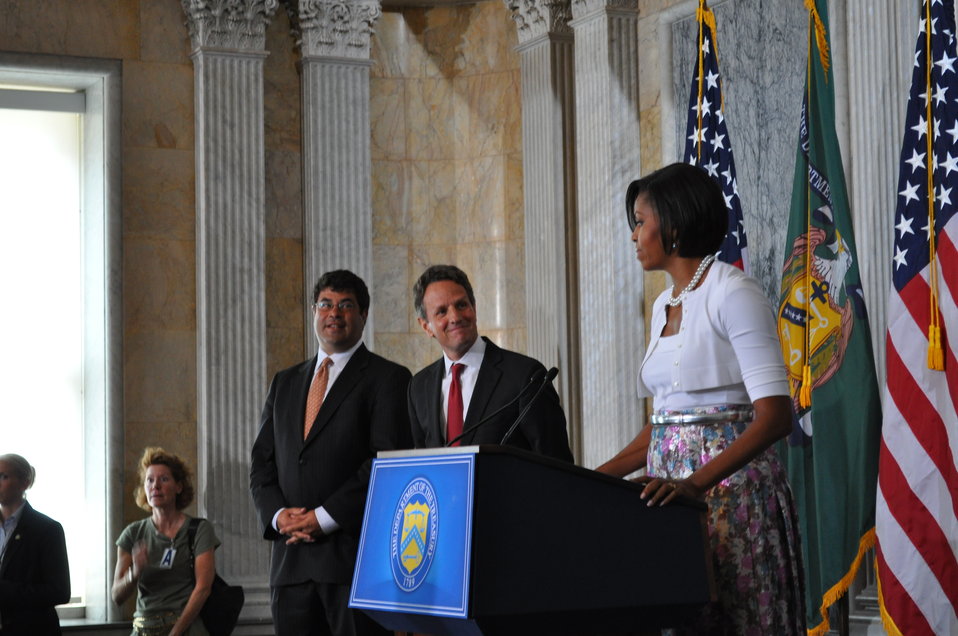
Michelle Obama visits the Treasury Department, 7/7/10

First Lady Michelle Obama spoke at the Treasury Department to thank Treasury employees for their dedication. 'We couldn’t have accomplished the things that we have in this administration so quickly without your dedication,' she told the audience. 'So my job here is simply to say thank you for all that you do and all that you’ll continue to do. We are truly grateful for your service.'